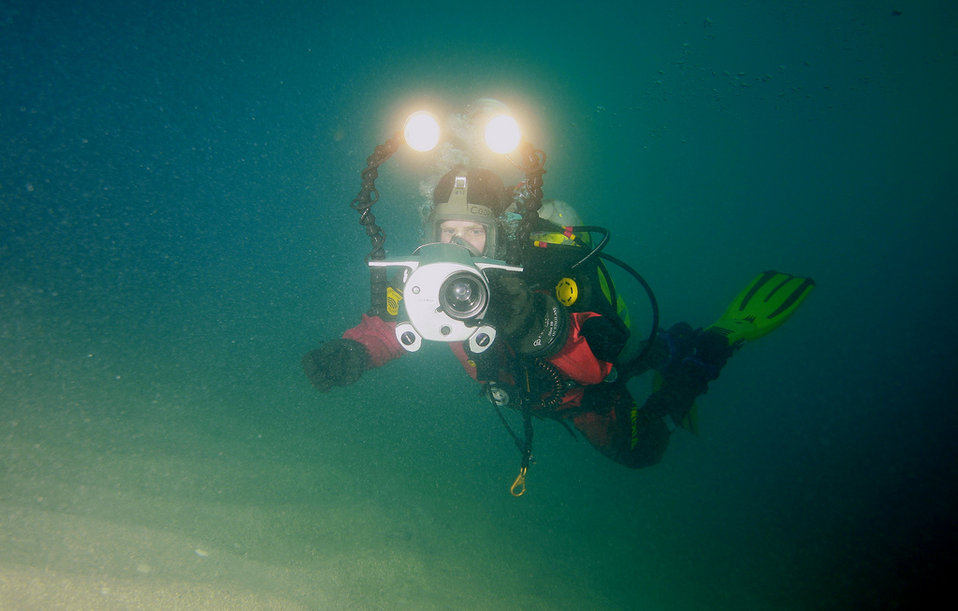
Monitoring Water Quality from the OSV Bold

In this photo, Dan Cooke from EPA's Region 2 dive team is videographing industrial discharge in St. Croix, USVI.

Region 2 more locally serves New Jersey, New York, Puerto Rico, the U.S. Virgin Islands and eight tribal nations: www.epa.gov/region2